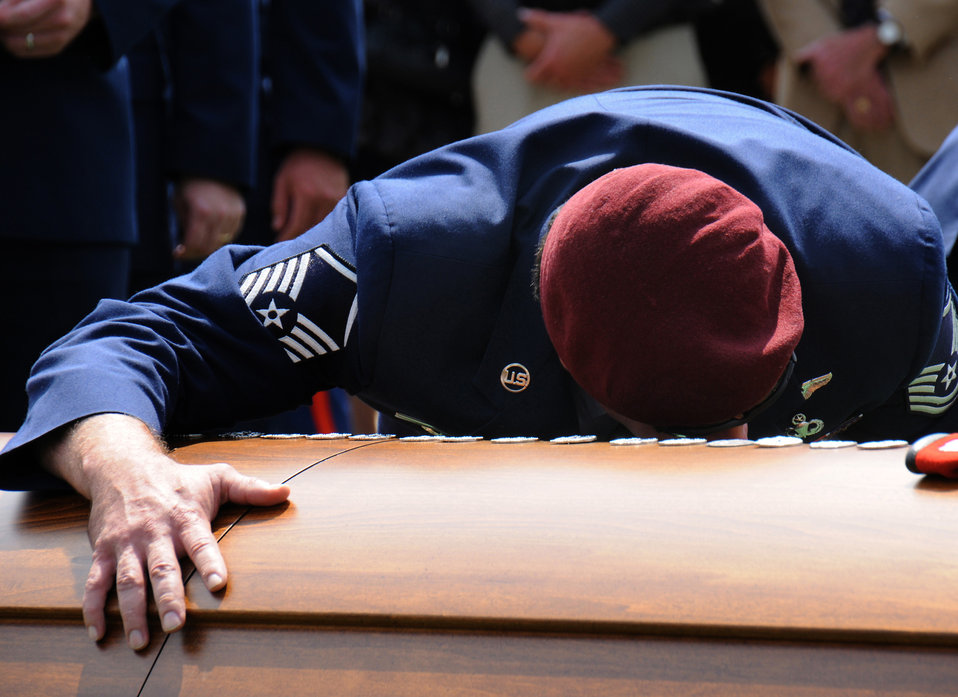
Embrace

The casket of Staff Sgt. Andrew Harvell is embraced by one of his teammates during Harvell's funeral at Los Angeles National Cemetery Sept. 10, 2011, in California. The casket is adorned with more than 100 combat controller and pararescue metal beret emblems that were hammered in by Harvell's teammates in one final tribute. Harvell was a combat controller who died Aug. 6, 2011, when the CH-47 Chinook he was traveling in crashed in the Wardak province of Afghanistan.